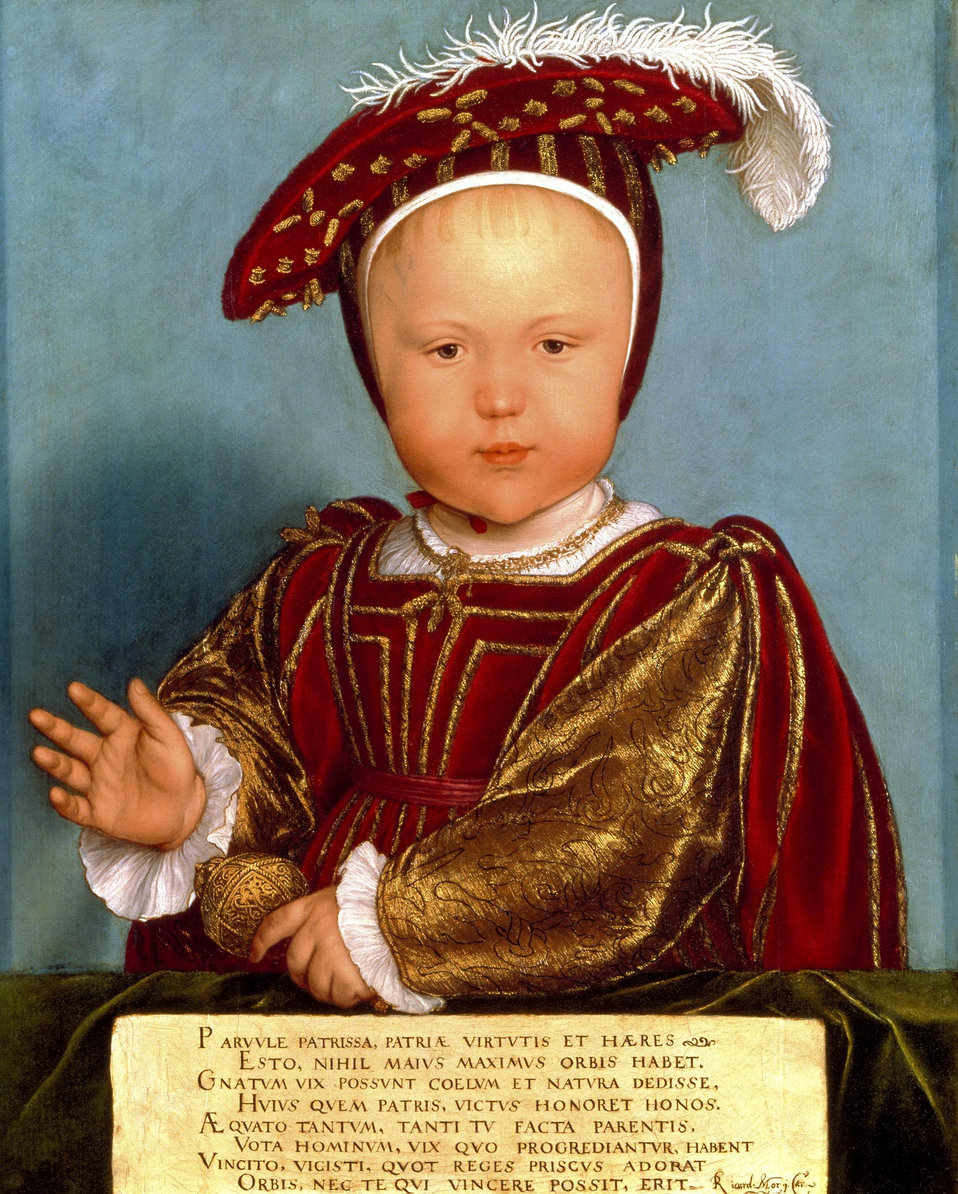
Edward, Prince of Wales (later Edward VI) by Hans Holbein the Younger and Studio